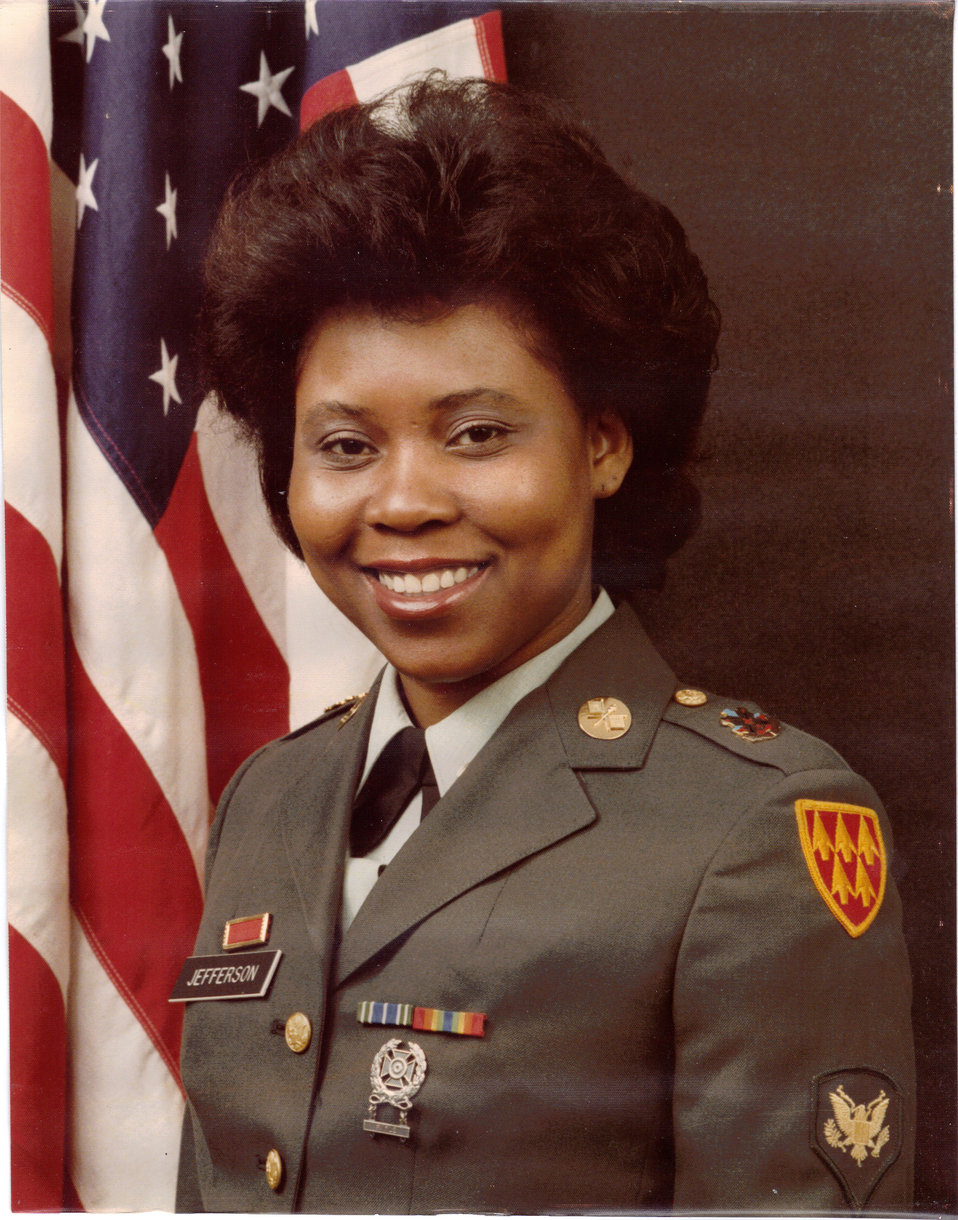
Denise Jefferson, a Grant and Agreement and Contract Specialist with Region 3, served in the U.S. Army for 10 years on Active Duty, six with the Pennsylvania Army National Guard and four in the Maryland Army Reserve. I retired in 2012 as a Staff Sergeant. My Military specialty was Communications, and Jefferson may be a vanishing breed: She received training as a Morse Code Operator.